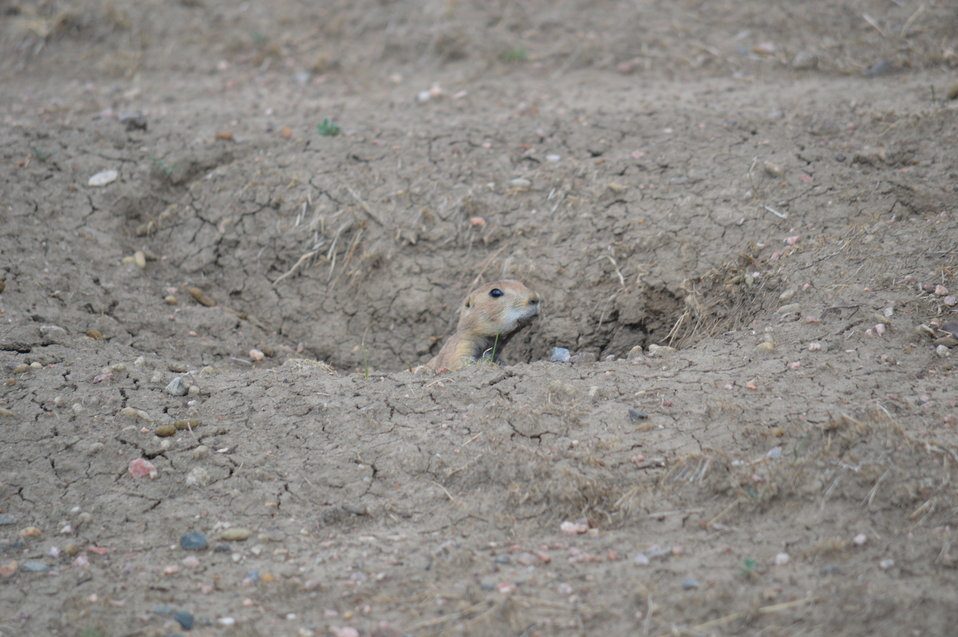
Interns visit the NBFFCC

In the summer of 2012, USFWS Region 6 interns visited the National Black-footed Ferret Conservation Center (NBFFCC) in Colorado to learn how the program reintroduces the endangered Black-footed ferret back into its native habitat.